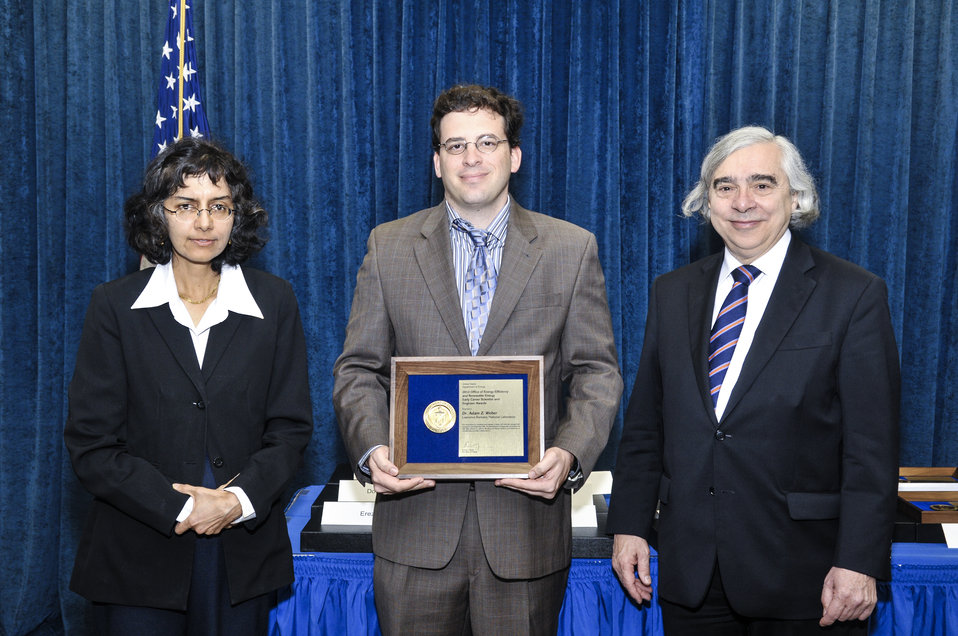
PECASE Awards: DOE Secretary E. Moniz with DOE Office of Energy Efficiency and Renewable Energy Director of Fuel Cell Technologies Office Sunita Satyapal, PECASE Awardee Adam Z. Weber on April 14, 2014